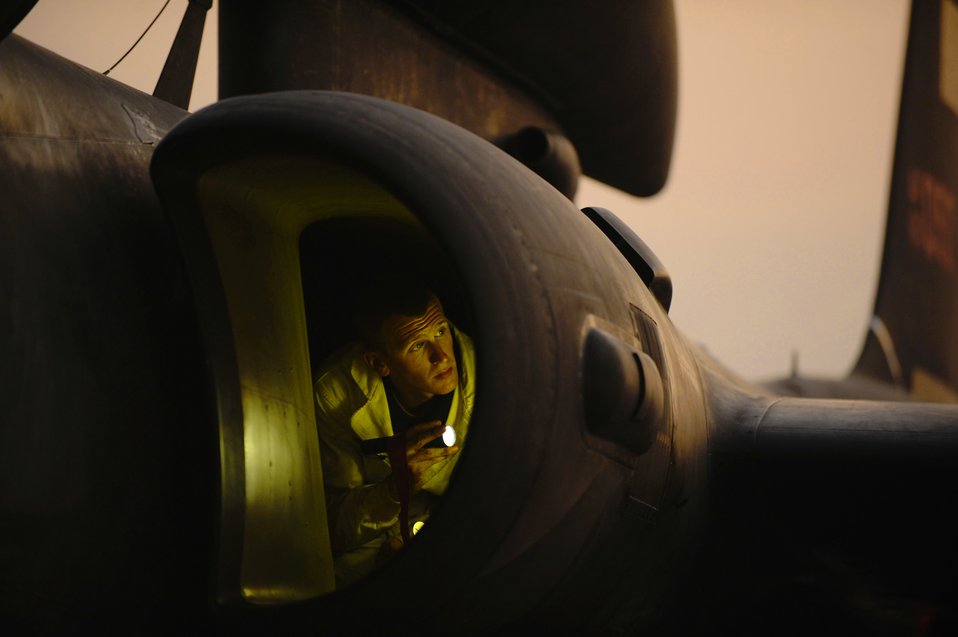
A tight fit

Staff Sgt. Joshua Montgomery inspects the intake of a U-2 Dragon Lady from the 99th Expeditionary Reconnaissance Squadron at an air base in Southwest Asia, Nov. 23, 2010. The U-2 is a high-altitude reconnaissance aircraft that reaches altitudes above 70,000 feet. Sergeant Montgomery is with the 380th Expeditionary Aircraft Maintenance Squadron.